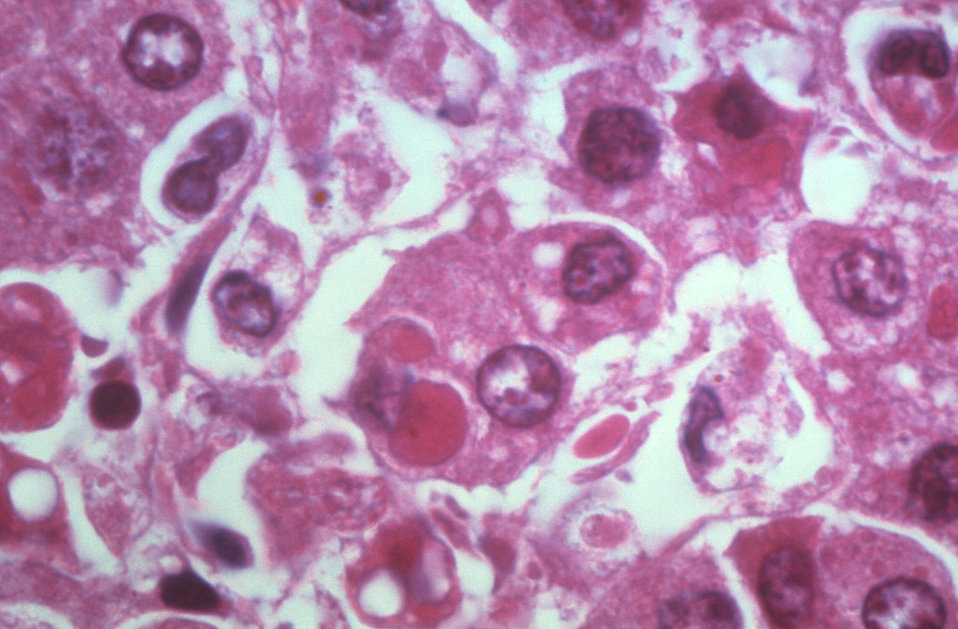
This is a photomicrograph of human liver tissue infected with Ebola virus, the cause of African Hemorrhagic Fever.